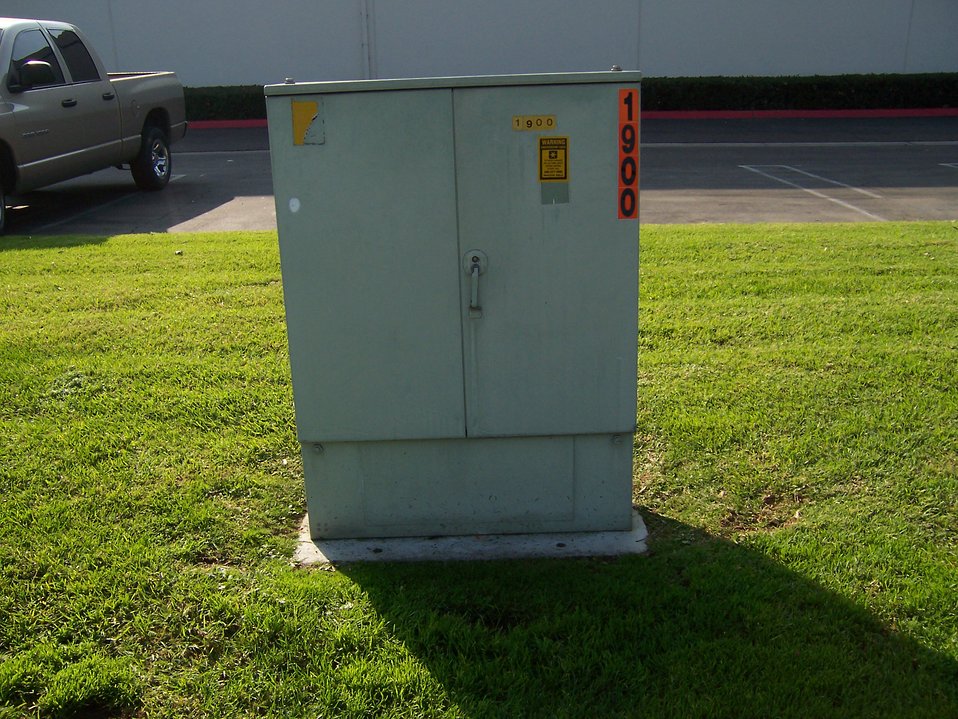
a en:Serving Area Interface